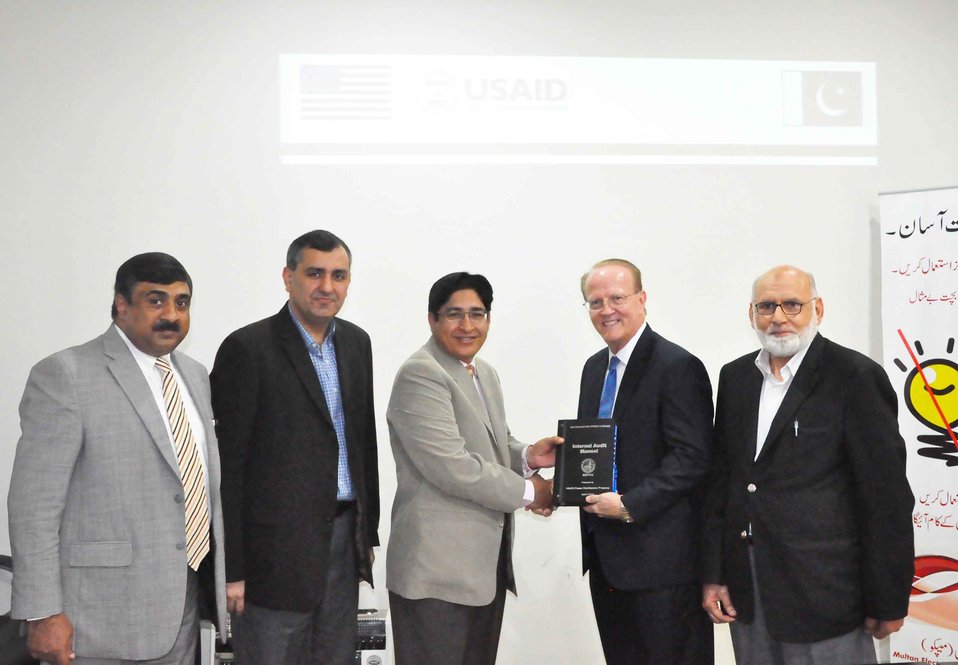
USAID revamps the Financial Structure of MEPCO

New financial processes and audit manuals were introduced in DISCOs by the USAID Power Distribution Program. The new manuals update the legacy manuals of DISCOs that were last revised in the 1980s thus providing the companies with manuals consistent with those of a best practices modern utility.

“A milestone was reached when the first quarterly risk-based audit report was issued and MEPCO became the first DISCO to issue the results of its internal audit under the new framework. Internal audit of one business process was conducted which demonstrated a 45% increase in revenue against what was previously reflected by legacy internal audit functions.”
USAID Power Distribution Program Finance Lead
Abid Lodhi